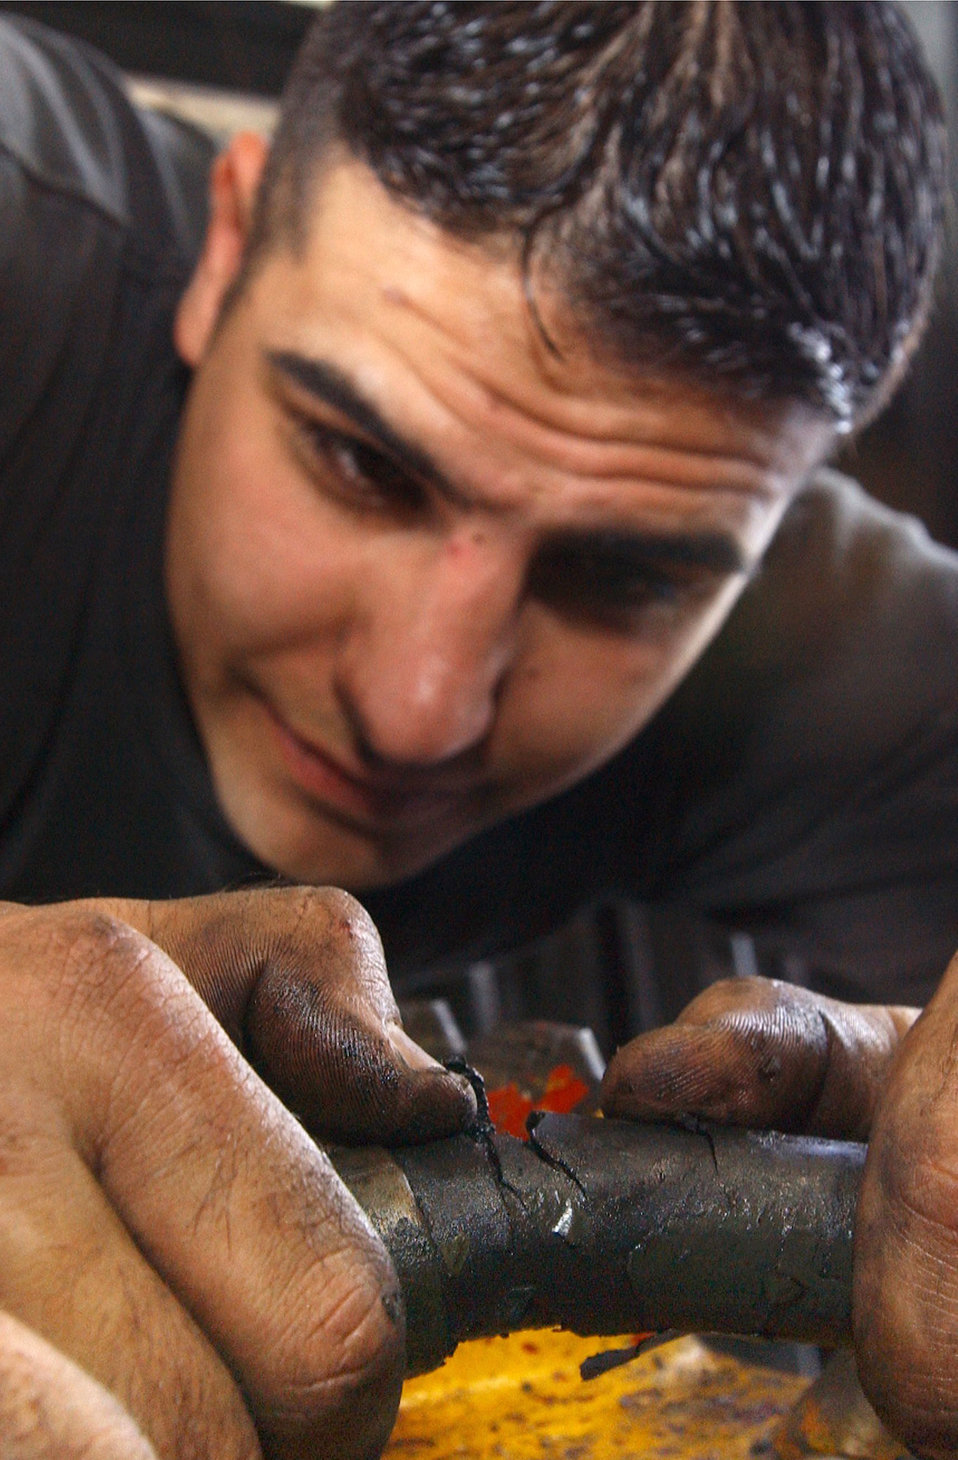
Inspection line

KADENA AIR BASE, Japan. -- Senior Airman Dustin Barnhardt inspects the cracks in a hydraulic line here Dec. 9. Airman Barnhardt is assigned to the 18 Logistics Readiness Squadron.